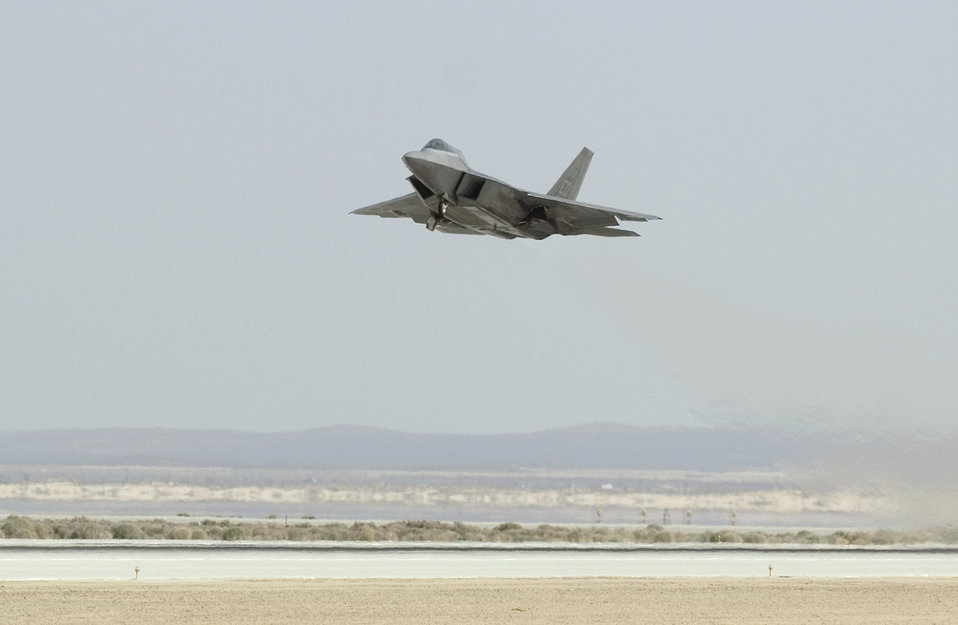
F-22 Raptor

An F-22 Raptor powered by biofuel takes off March 18, 2011, at Edwards Air Force Base, Calif. The flight was the capstone of a series of ground and flight test events conducted by members of the 411th Flight Test Squadron for the F-22, using the biofuel blend.